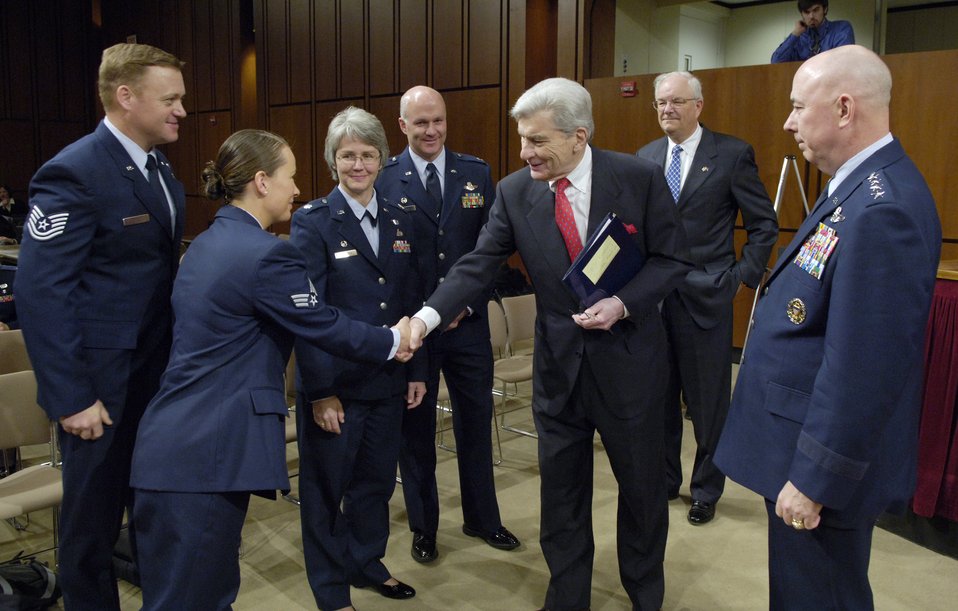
Testimony on Capitol Hill

Sen. John Warner (R-Va.) greets Airmen attending the Senate Armed Services Committee hearing Thursday, March 2, 2006, in Washington, D.C. At right are Air Force Chief of Staff Gen. T. Michael Moseley and Secretary of the Air Force Michael W. Wynne. The invitees are, from left: Senior Airman Polly-Jan Bobseine, a security forces specialist with the 823rd Security Forces Squadron, Moody Air Force Base, Ga.; Tech. Sgt. Bradley Reilly, a combat controller with the 23rd Special Tactics Squadron, Hurlburt Field, Fla.; Lt. Col. Anne Konnath, commander of the 328th Weapons Squadron, Nellis Air Force Base, Nev.; and Lt. Col. Trey Turner III, commander of the 17th Reconnaissance Squadron, Nellis AFB, Nev.